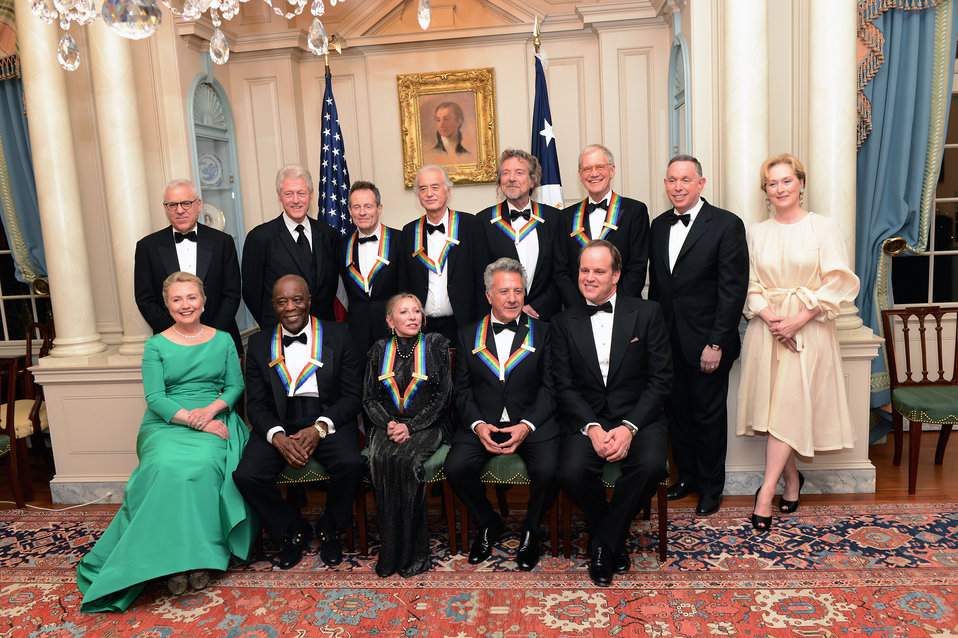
Secretary Clinton at the 35th Annual Kennedy Center Honors

U.S. Secretary of State Hillary Rodham Clinton poses for a photo at the 35th Annual Kennedy Center Honors in Washington, D.C., December 1, 2012.